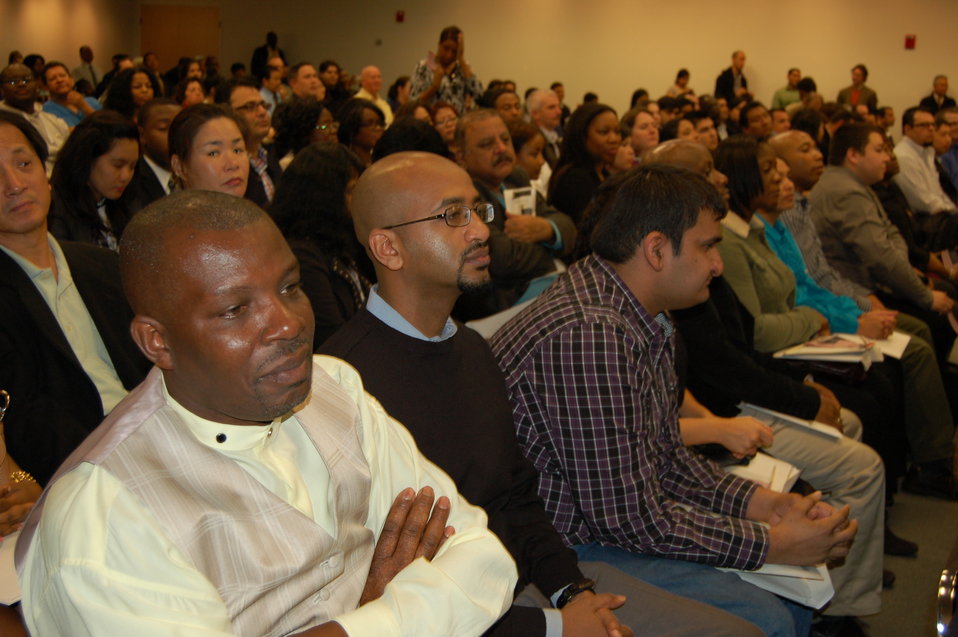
Naturalization Ceremony